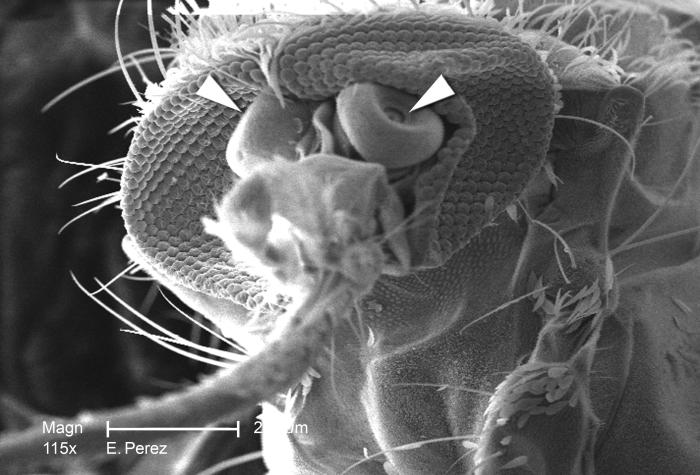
Under a relatively low magnification of 115X, this scanning electron micrograph (SEM) revealed some of the exoskeletal morphology on the surface of an unidentified mosquito found deceased in the suburbs of Decatur, Georgia. An already structurally-frail organism, this insect was discovered in a very dry, dessicated stated, and therefore, was missing a number of its body parts, including its antennae.Note the two 'scapes' (arrows), at which point each respective antenna would have emanated from the mosquito's head region. Into this cup-like structure yet another segment would have been attached, known as the 'pedicle'.